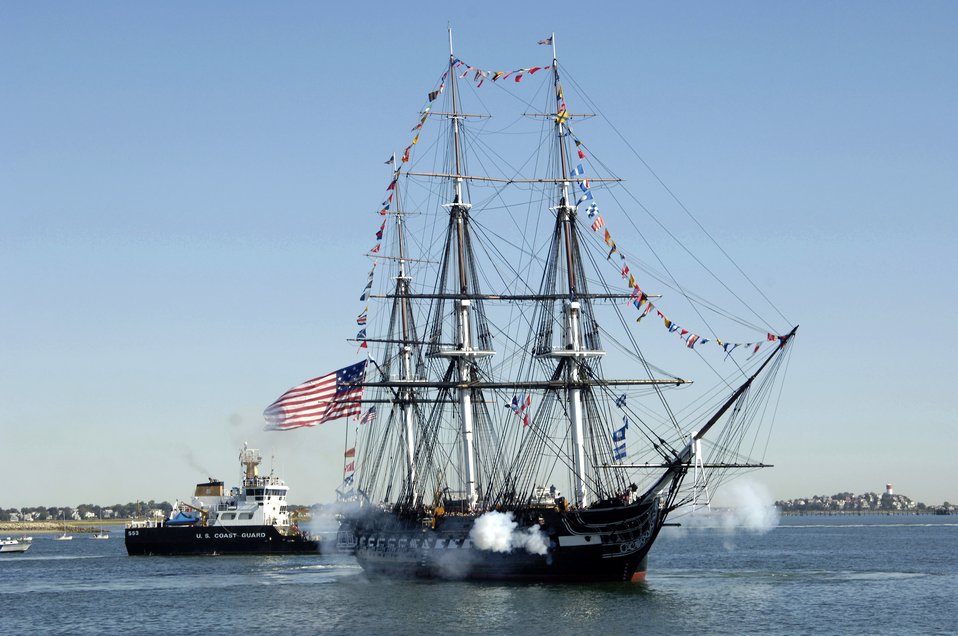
'Old Ironsides' hosts Medal of Honor recipients

Crewmen aboard the USS Constitution fire a 21-gun salute to honor Medal of Honor recipients onboard the USS Constitution, the oldest commissioned warship afloat. The Medal of Honor recipients were there for a turn-around cruise and Medal of Honor flag presentation Sept. 30 in Boston Harbor. The Medal of Honor is the country's highest military honor, awarded for acts of valor above and beyond the call of duty.